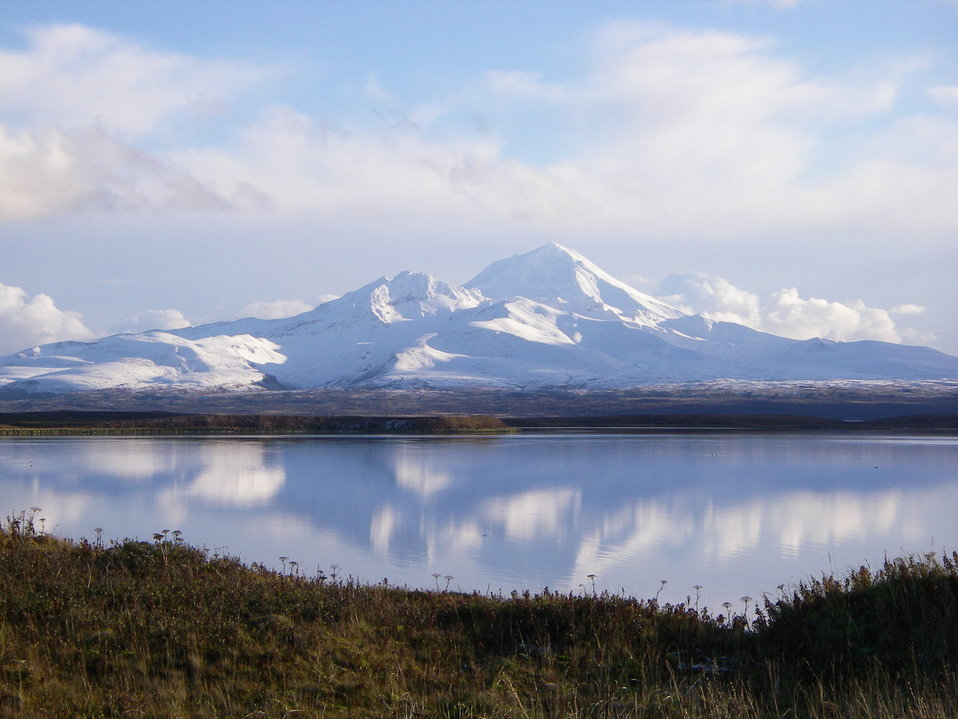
Frosty Peak

Izembek National Wildlife Refuge